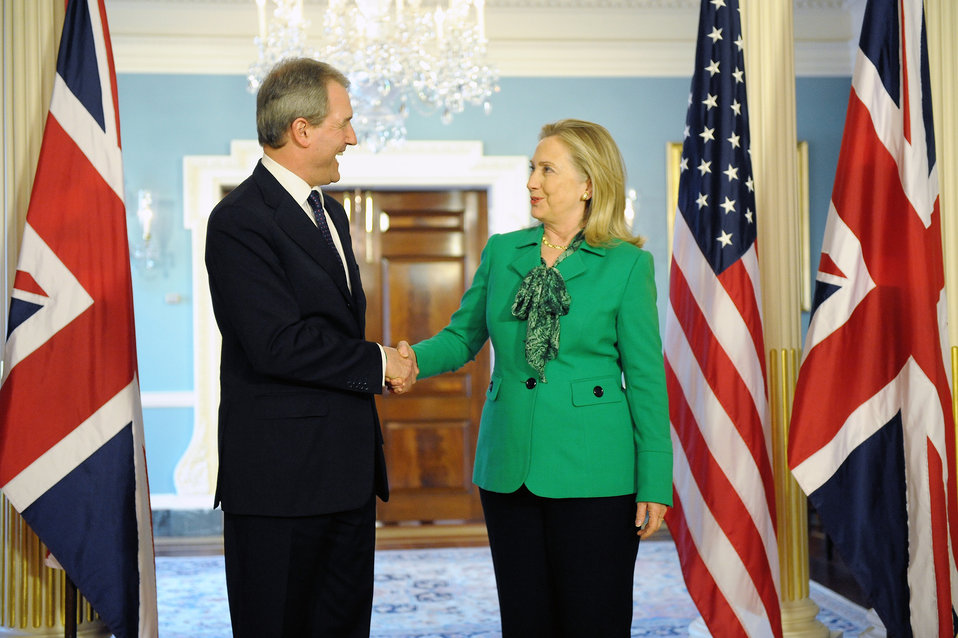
Secretary Clinton Meets With UK Secretary of State for Northern Ireland Paterson

U.S. Secretary of State Hillary Rodham Clinton meets with UK Secretary of State for Northern Ireland Owen Paterson at the U.S. Department of State in Washington, D.C., on March 20, 2012.